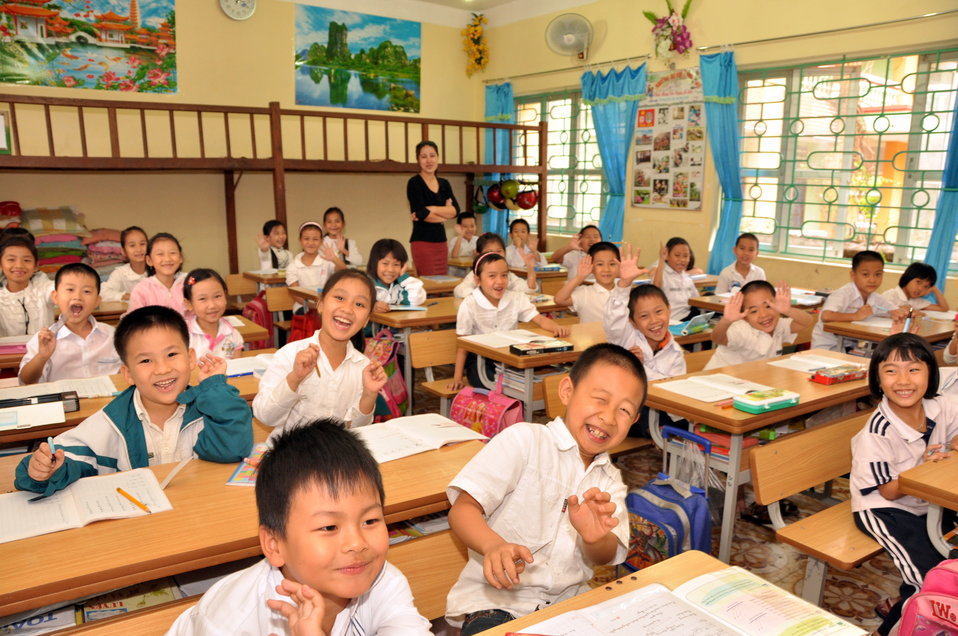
School children receive a dose of deworming medicine in Dien Bien

October 31, 2012